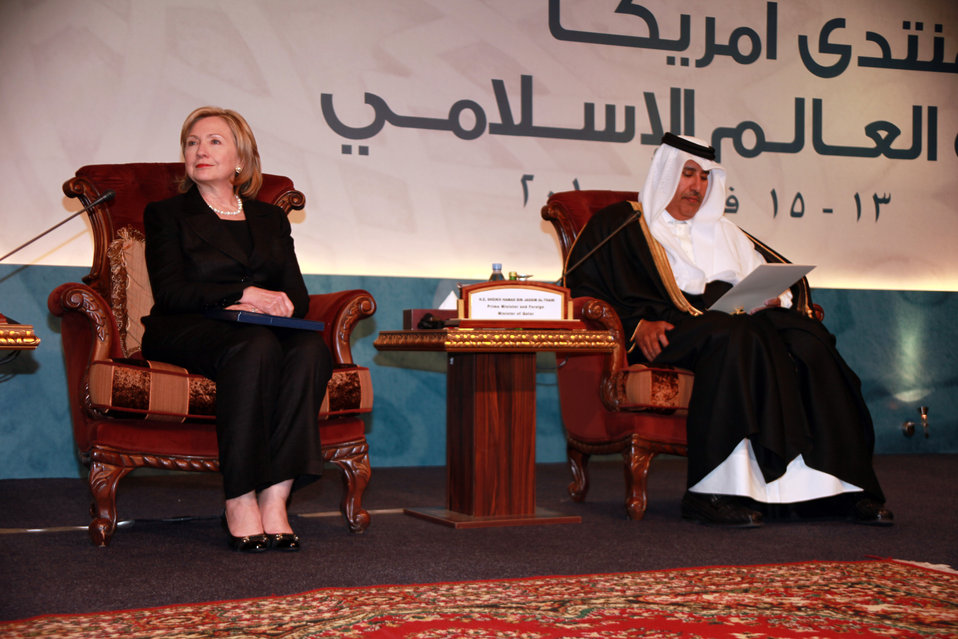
Secretary Clinton Travels to Qatar and Saudi Arabia

U.S. Secretary of State Hillary Rodham Clinton on stage with Qatar Prime Minister/Foreign Minister Sheikh Hamad bin Jassim Al Thani taking questions at the U.S. Islamic World Forum at the Sheraton Hotel in Doha, Qatar February 14, 2010.